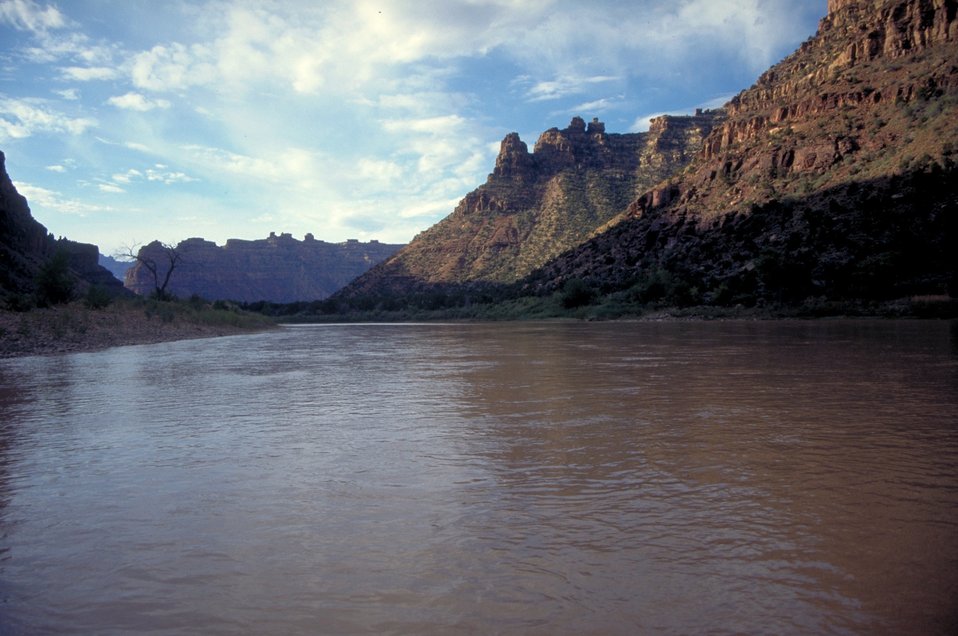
Desolation/Gray Canyons near Price, Utah.